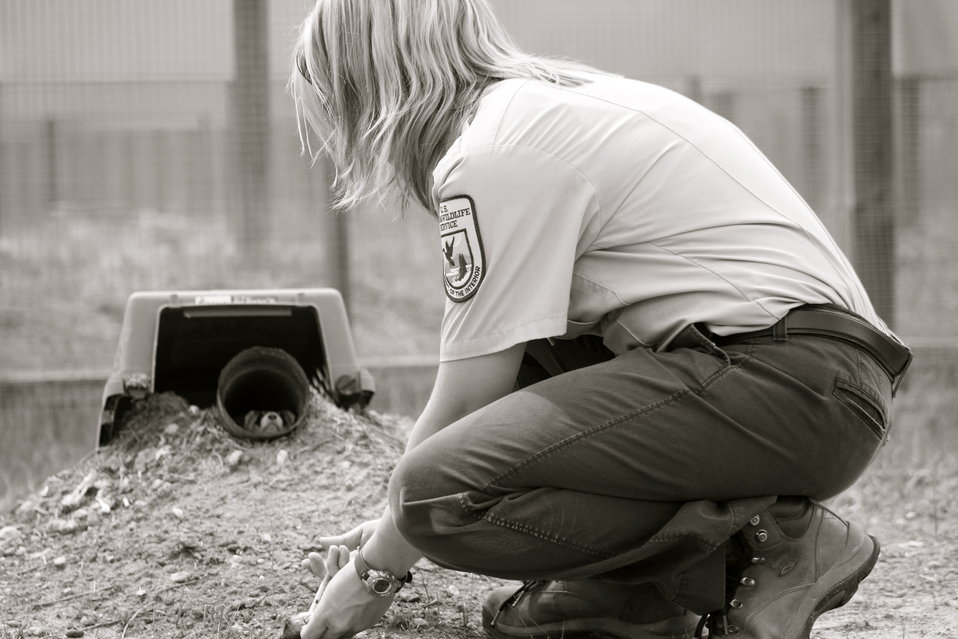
Interns visit the NBFFCC

In the summer of 2012, USFWS Region 6 interns visited the National Black-footed Ferret Conservation Center (NBFFCC) in Colorado to learn how the program reintroduces the endangered Black-footed ferret back into its native habitat.

In this photo, Robyn Bortner (NBFFCC Biologist) feeds the ferrets in their outdoor preconditioning pens!